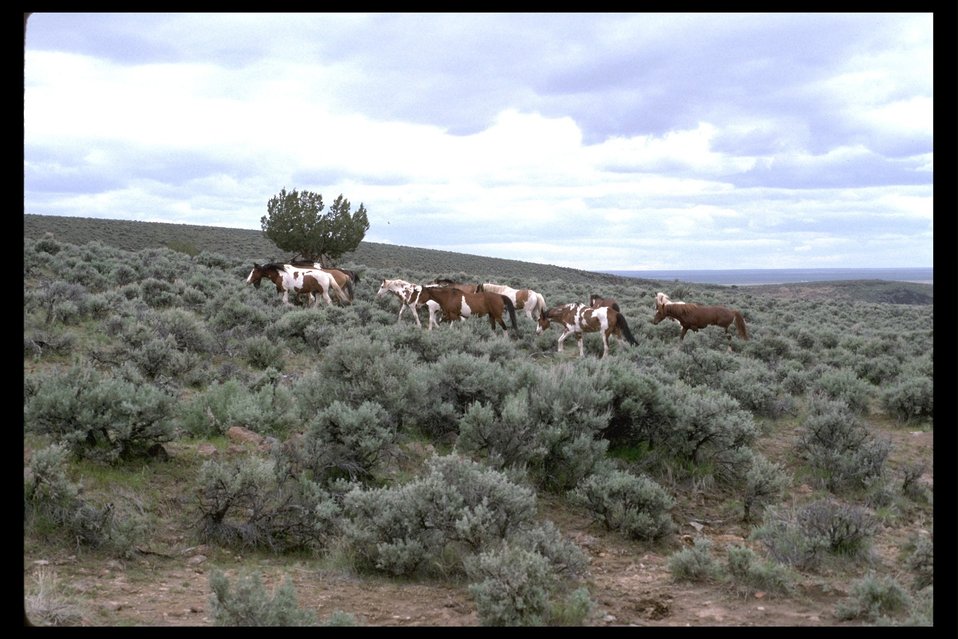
Wild horses in the South Steens HMA.